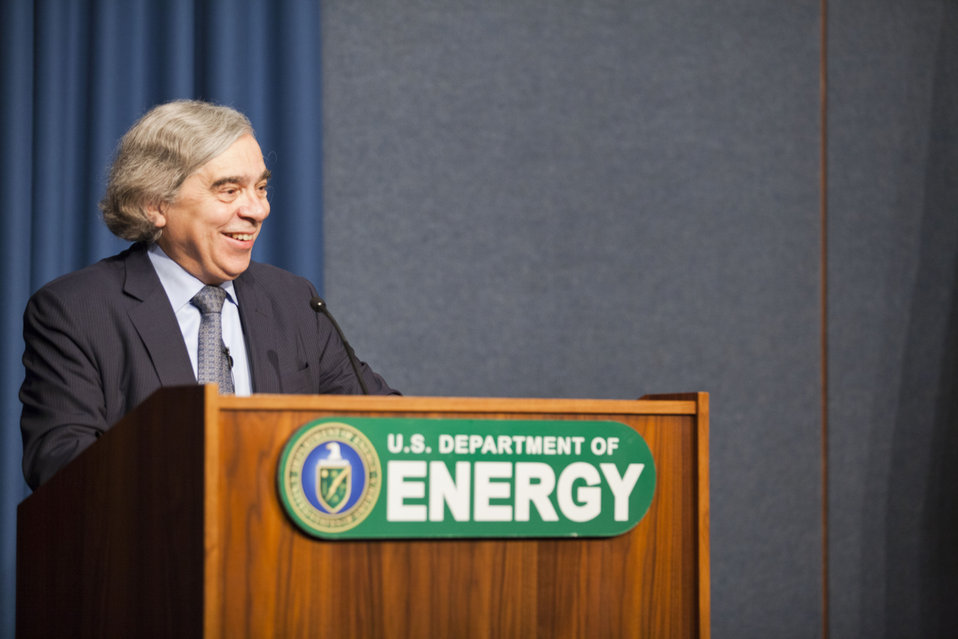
DOE Town Hall

On May 22, 2013, newly sworn-in Energy Secretary Dr. Ernest Moniz opened up a town hall forum. DOE employees were invited to attend, and submit questions to staff.